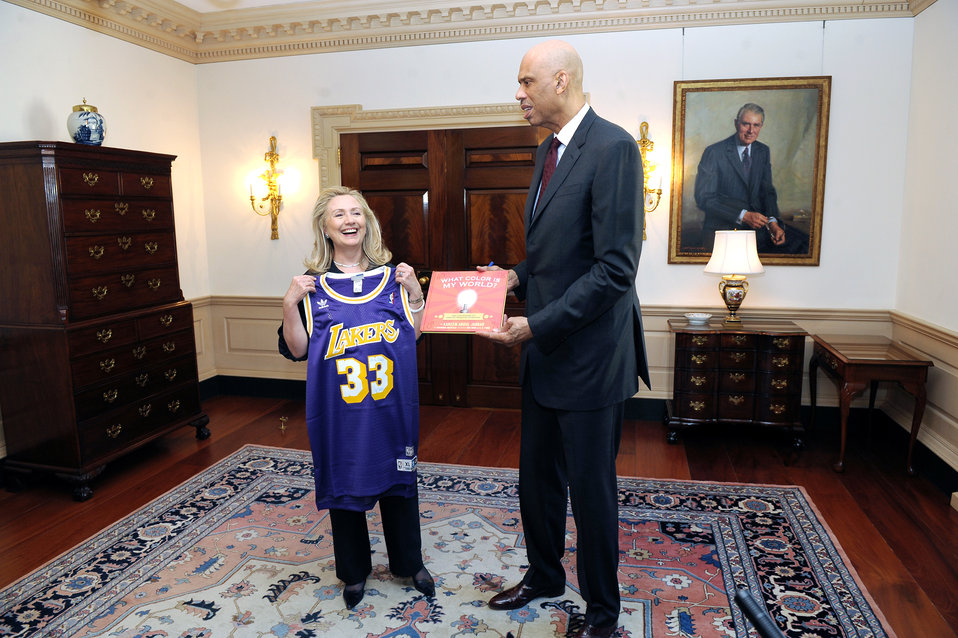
Secretary Clinton Meets With Kareem Abdul-Jabbar

U.S. Secretary of State Hillary Rodham Clinton meets with Hall-of-Famer Kareem Abdul-Jabbar, the NBA’s All-Time Leading Scorer and a New York Times’ best-selling author, to discuss his new role as a global Cultural Ambassador, at the U.S. Department of State in Washington, D.C., on January 18, 2012.